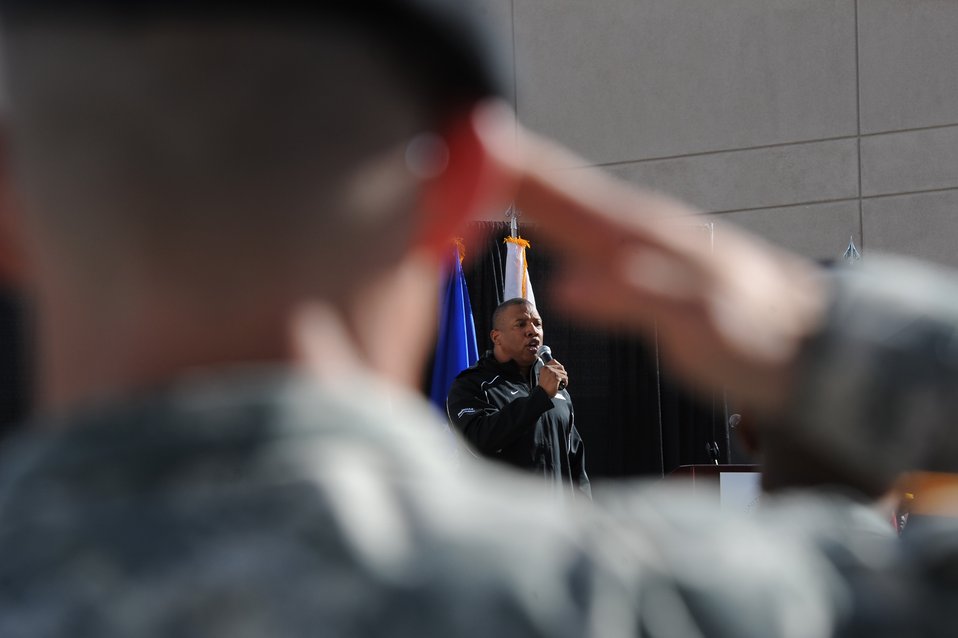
Opening Ceremony

Paralympian John Register sings the national anthem during the opening ceremony of the 2011 Warrior Games at the U.S. Olympic Training Center in Colorado Springs, Colo., May 16, 2011. Some 200 wounded warriors and disabled veterans from all the military services are competing in paralympic-style athletic events May 16 through May 21.